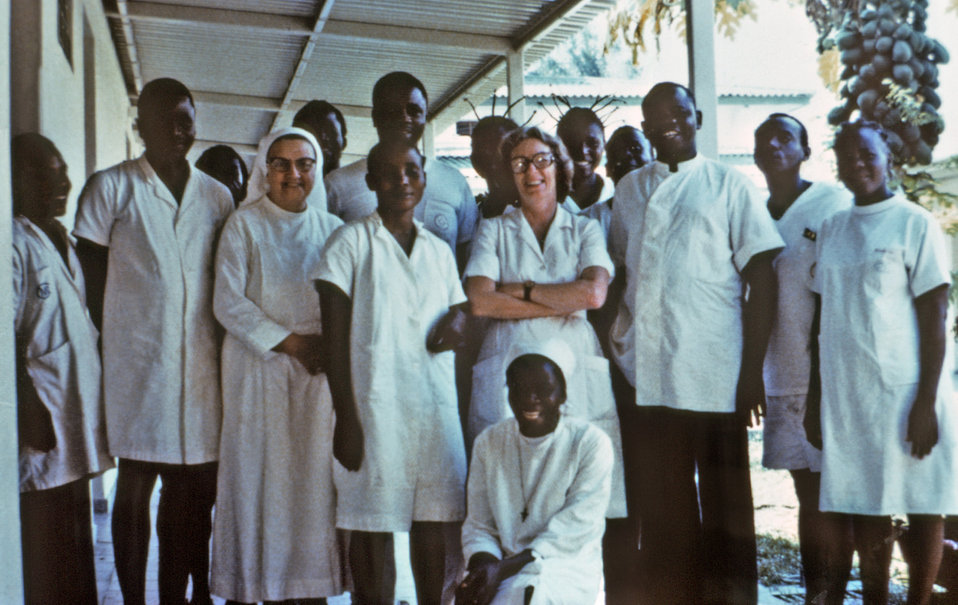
Margaret Isaacson, M.D., standing in the middle with arms folded, and Sister Donatienne Ngunga, third from the left, are shown among Ngaliema Hospital staff members during the Zairian (now known as the Democratic Republic of the Congo) Ebola outbreak of 1976.